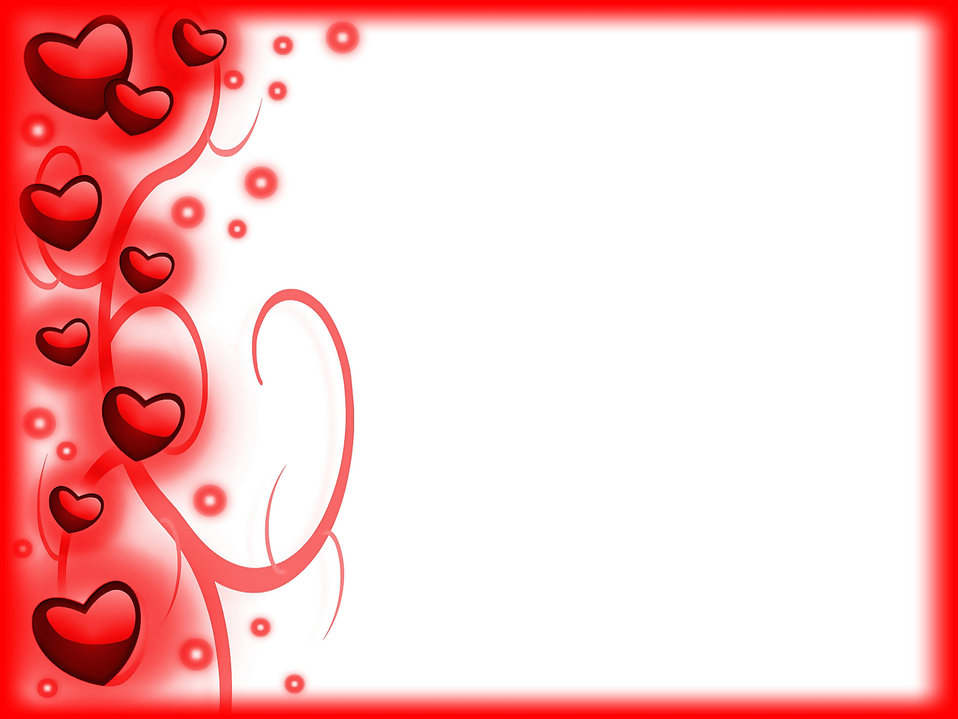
Hearts of love 2

Background.